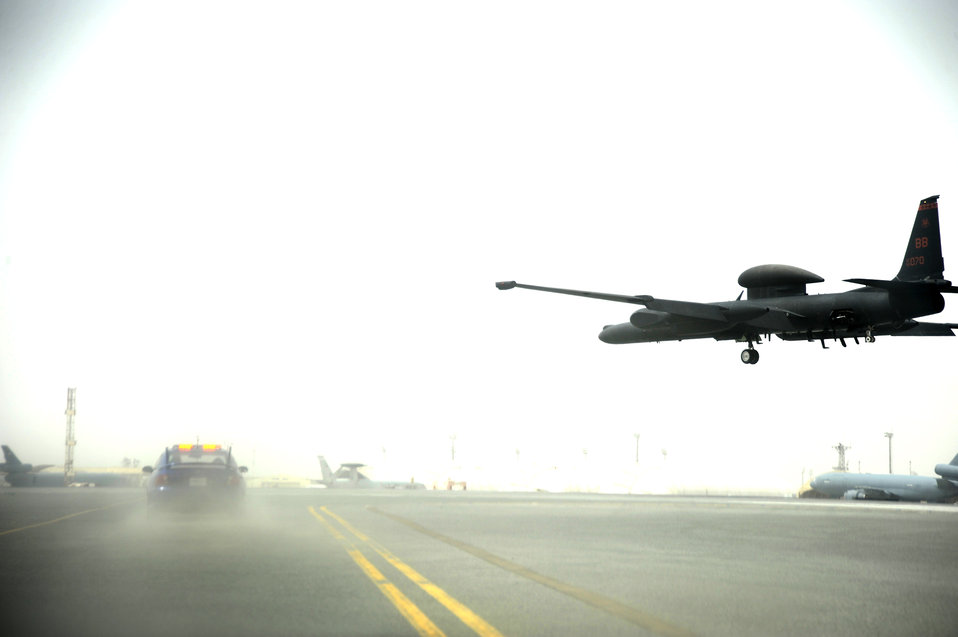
Bring 'er on in

A chase car drives along side as a U-2 high-altitude reconnaissance aircraft prepares to land July 30 at an air base in Southwest Asia. Because of unusual low-altitude handling characteristics and limited forward visibility, a second U-2 pilot normally